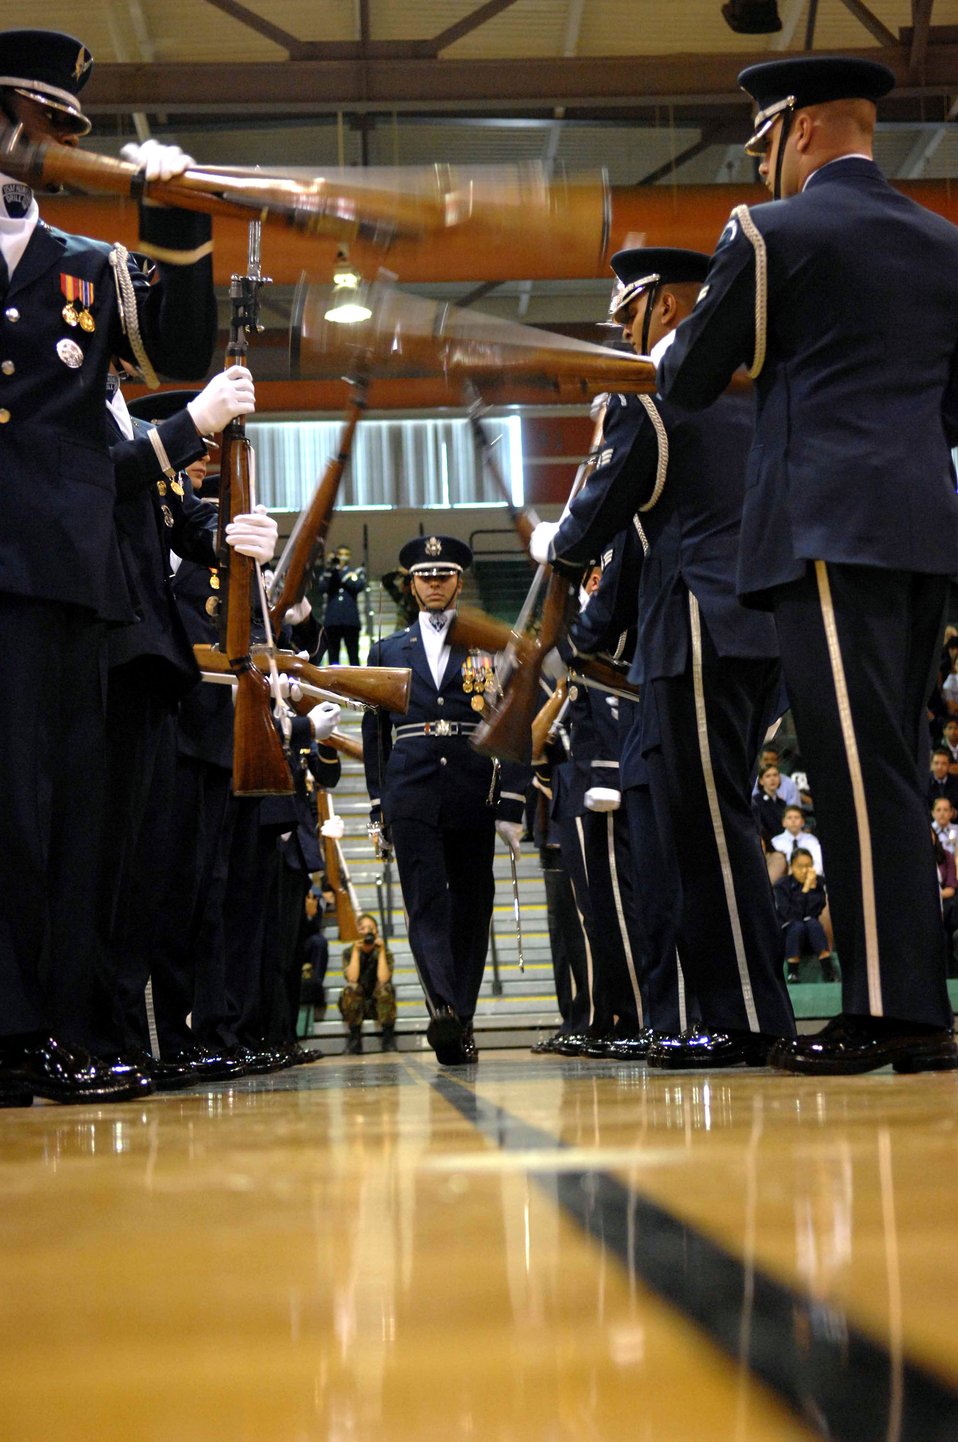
Vegas performance

Capt. Joshua Hawkins (center) walks through the gauntlet during the Air Force Honor Guard drill team performance at the Palo Verde High School gym Nov. 6 in Las Vegas. The Air Force Honor Guard drill team is in Las Vegas for 14 performances throughout the military and civilian community, and will perform during the Air Force 60th Anniversary Air Show and opening for Tops In Blue. Captain Hawkings is the Air Force Honor Guard drill team commander.